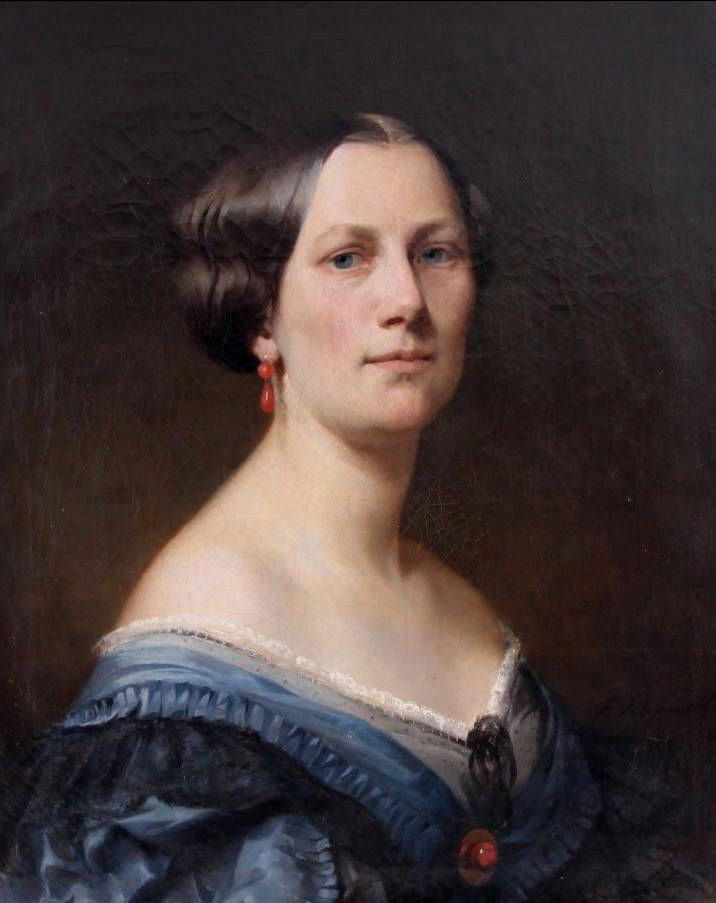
Deutsch: Portrait der Ehefrau des Malers. Signiert und datiert 1863, Öl auf Leinwand, 60 x 50 cm